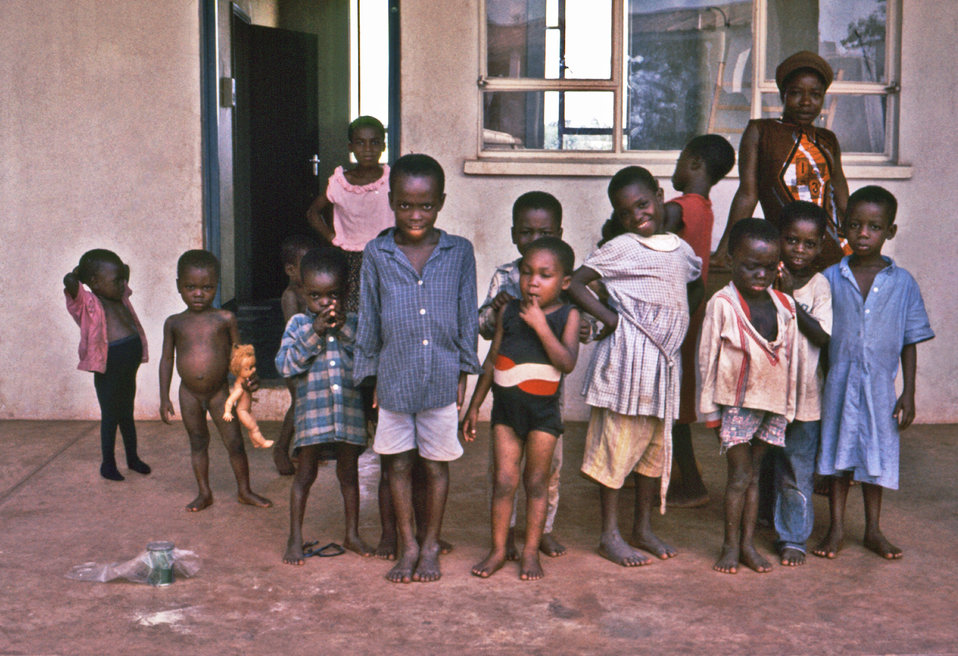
These children were standing outside a school in the southeastern area of Nigeria during the Biafran war of the late 1960s.